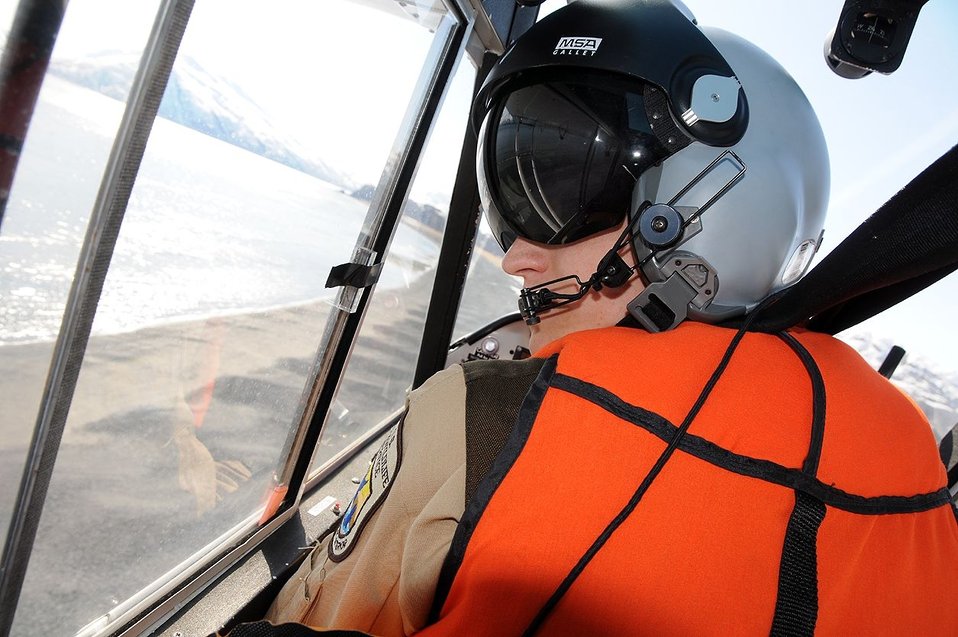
Isaac Bedingfield

National Wildlife Refuge System Law Enforcement Officer Isaac Bedingfield pilots a plane over Saltery Cove in Ugak Bay , Alaska. Officer Bedingfield, based at Kodiak National Wildlife Refuge, was named 2010 Officer of the Year for the U.S. Fish and Wildlife Service's Alaska region. (USFWS)